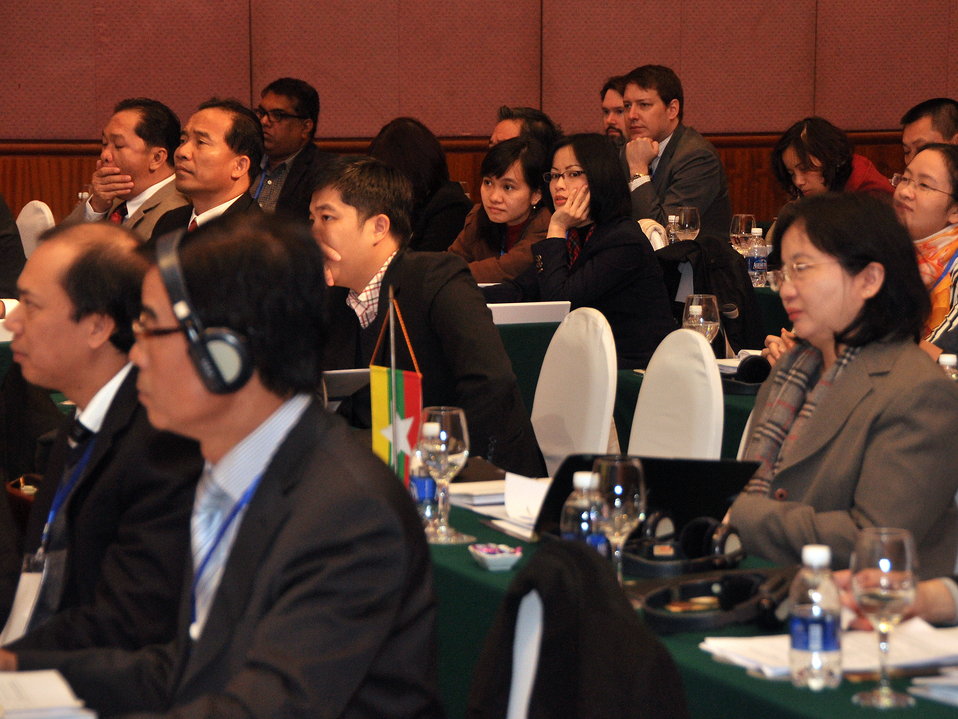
Delegates to the LMI Infrastructure Best Practices Exchange

Hanoi: January 14, 2013